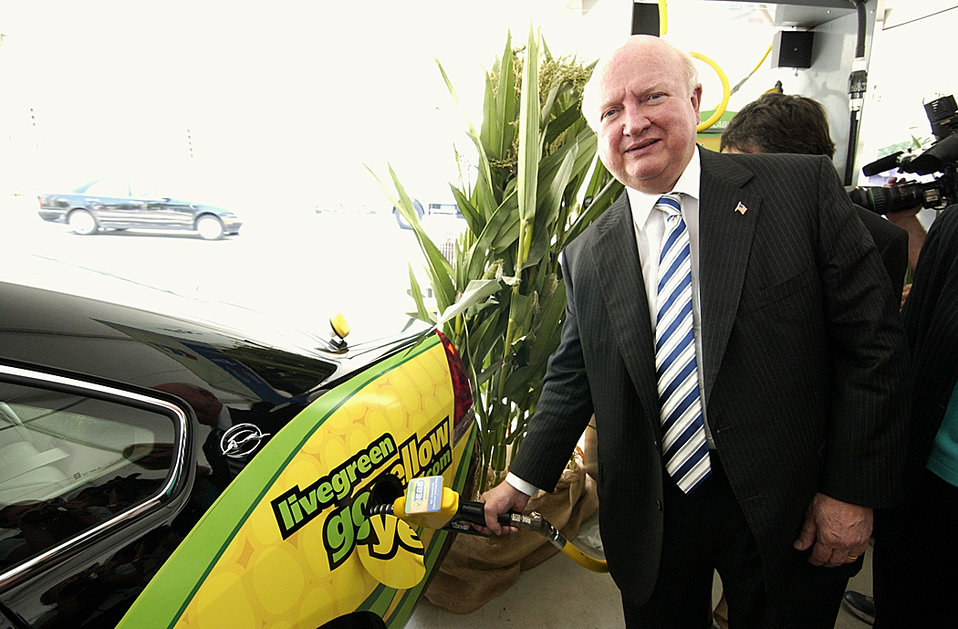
Energy Secretary Samuel Bodman pumps E-85 fuel into a GM E-85 Flexfuel vehicle at the grand opening of the 1st publicly available E-85 fueling station at the Georgetown Chevron Station in DC on August 28, 2007.